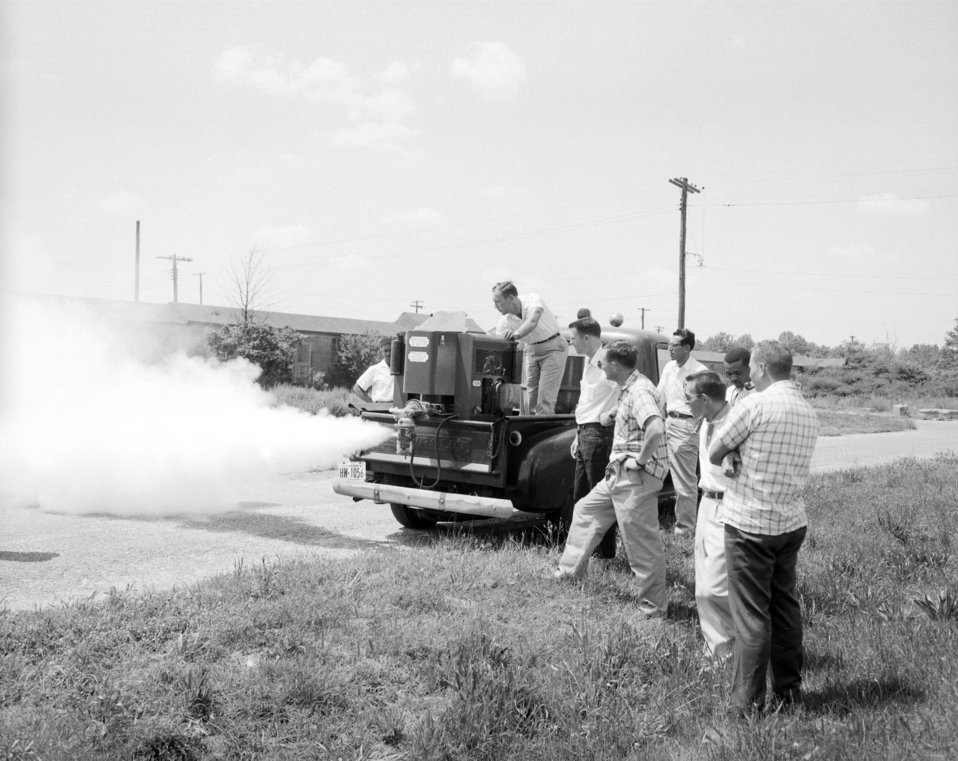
Insect and rodent control methods demonstrated during a training course.